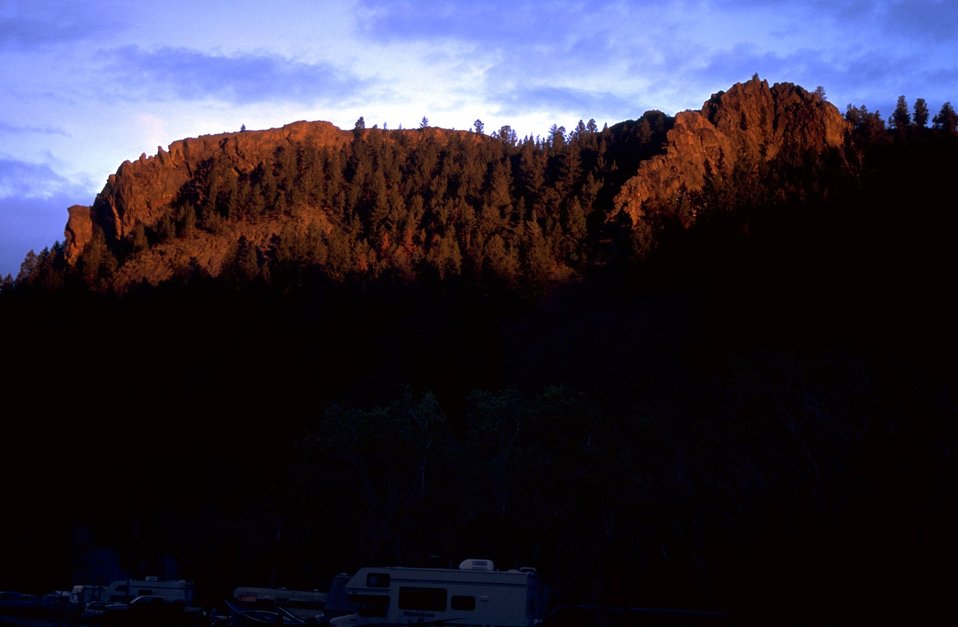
Sun shining atop the hills above Divide Campground